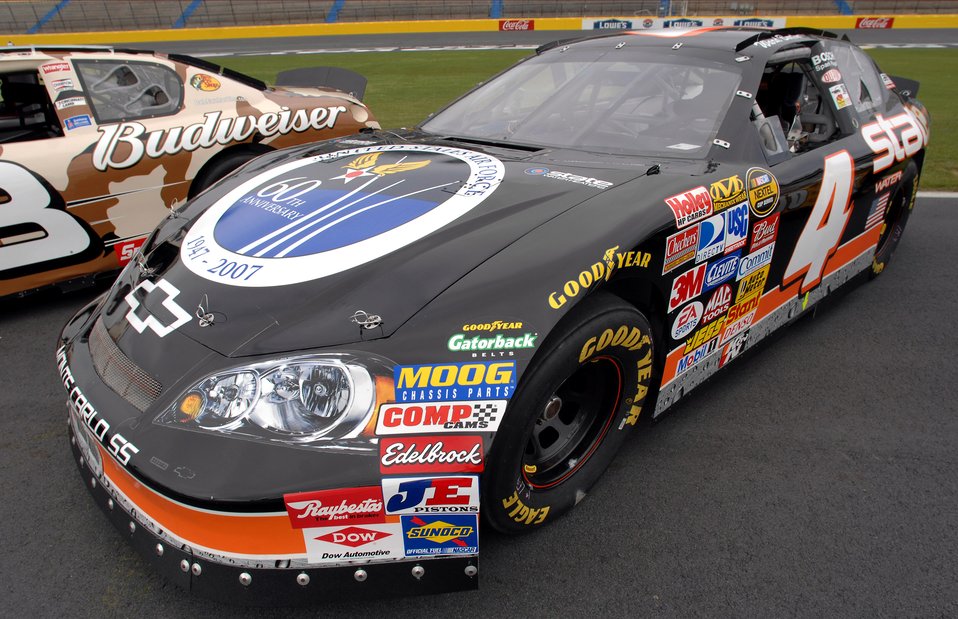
NASCAR salutes Air Force

The U.S. Air Force 60th anniversary logo is unveiled on the hood of NASCAR driver Ward Burton's State Water Heaters car during an unveiling ceremony May 8 at Lowe's Motor Speedway in Charlotte, N.C. The unveiling was in recognition of